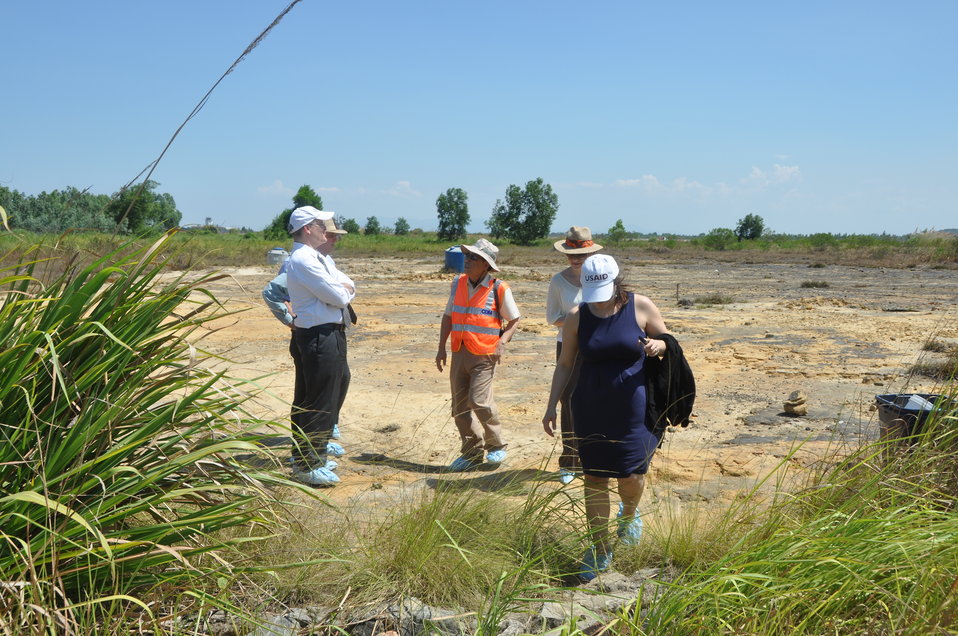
USAID Deputy Administrator Donald Steinberg and delegation visit Danang Airport

USAID Deputy Administrator Donald Steinberg Visits Vietnam